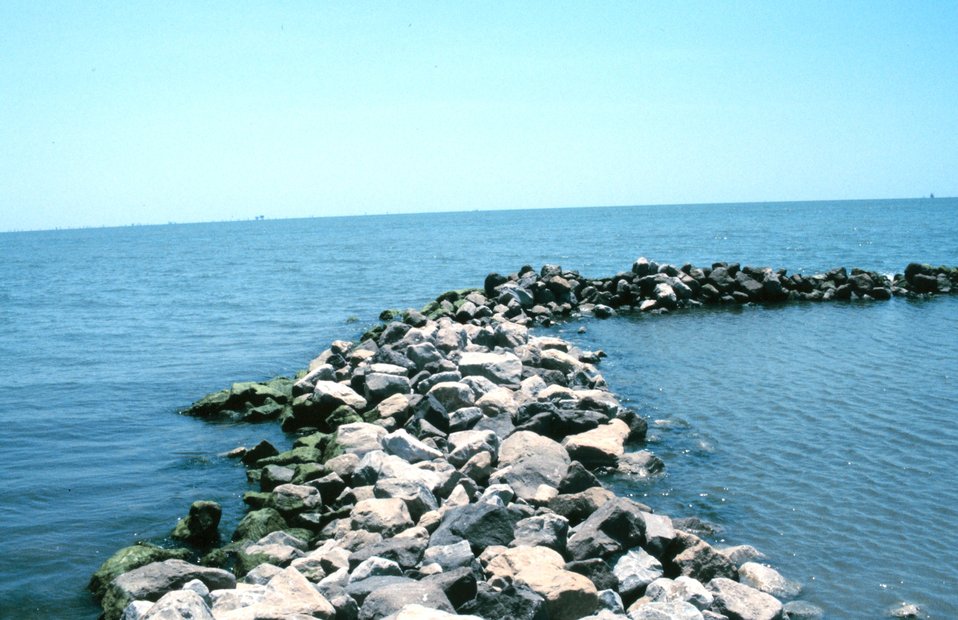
Another view of the southeastern part of the restoration area.